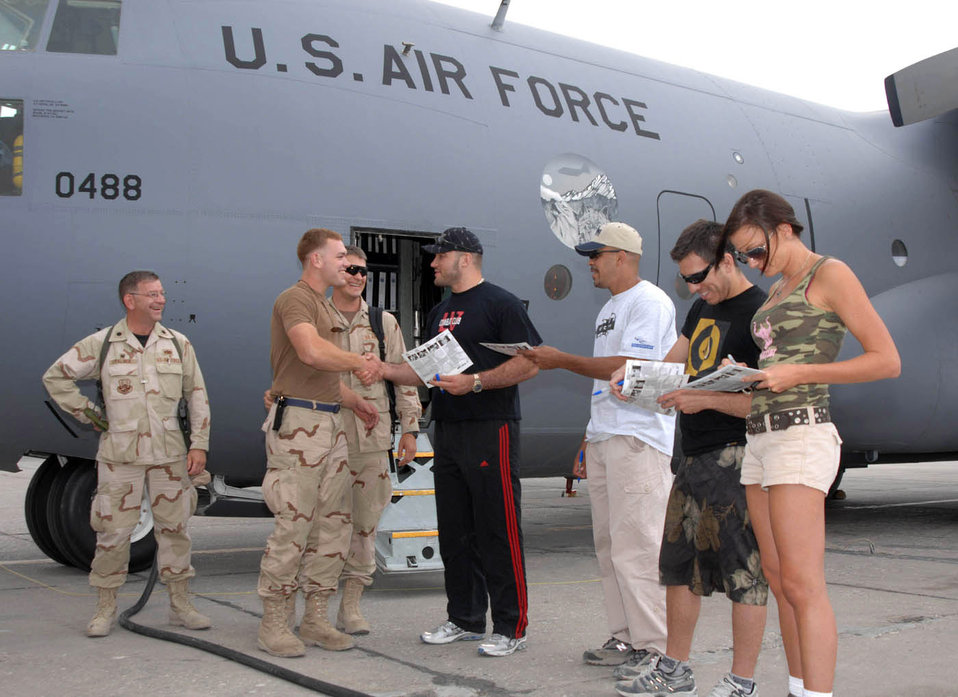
Ultimate Fighting Champions (from left to right) Heath Herring, Jorge Rivera, Kenny Florian and Amber Nicole Miller, the Octagon Girl, greet and sign autographs for the maintenance crews of the C-130 Hercules July 24 at Bagram Airfield, Afghanistan.